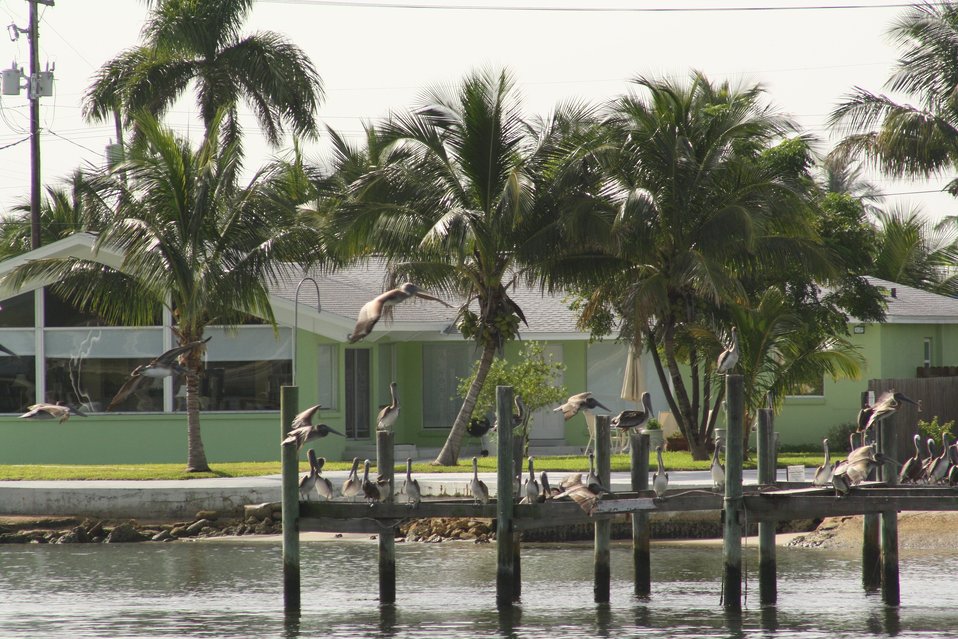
Passing out of Fort Pierce Inlet to the Gulf Stream. Pelicans leading the good life in Florida.